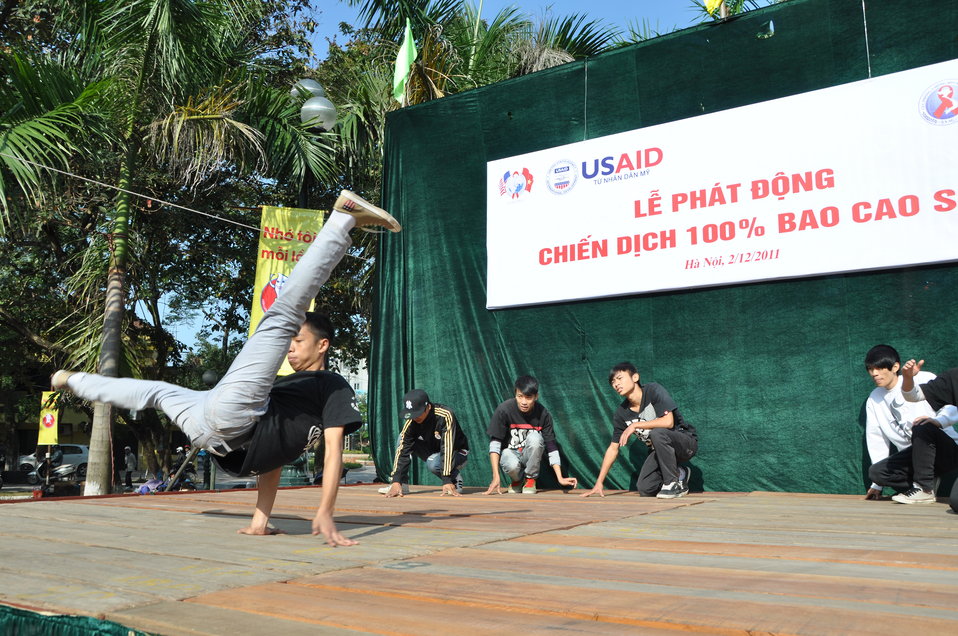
100% Condom Use Campaign Launch, Dec. 2, 2011